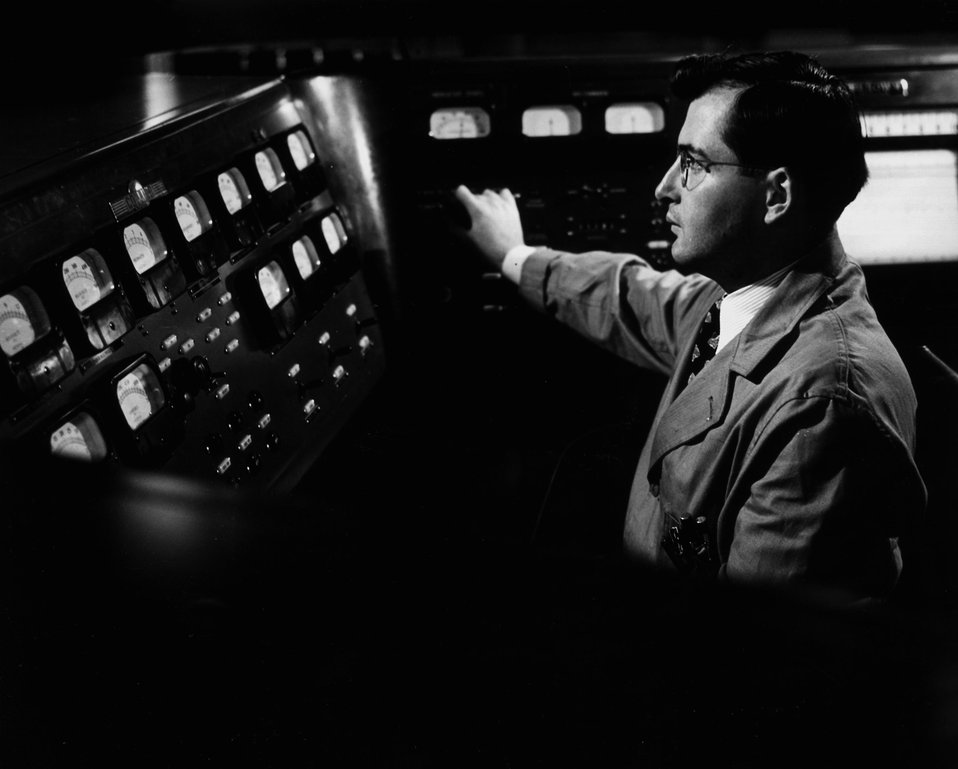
The Cyclotron at ABC's Brookhaven National Laboratory, accelerates sub-atomic particles to 23 million electron volts to bombard a variety of targets in order to supply radioisotopes for basis research and to provide an external particle beam for biological, medical and physical research.